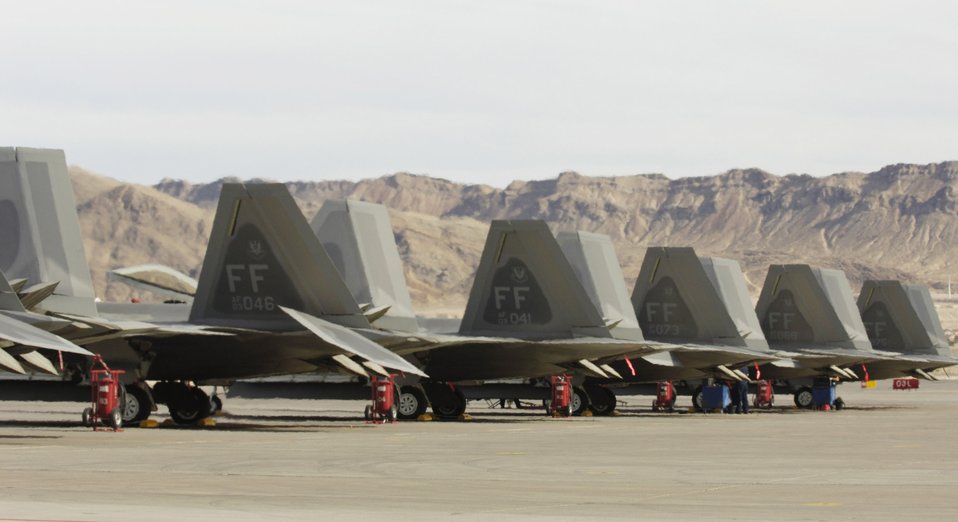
F-22s make mark at Red Flag

F-22 Raptors from 94th Fighter Squadron at Langley Air Force Base, Va., are parked on the flightline during Red Flag Feb. 6 at Nellis AFB, Nev. The exercise sharpens aircrews' warfighting skills in realistic combat situations. The aircraft are flying missions day and night at the nearby Nevada Test and Training Range where they simulate an air war. The Air Force and Navy, along with Australia and the United Kingdom militaries, are participating in the exercise. This is the first deployment to Red Flag for the 94th FS with F-22s.